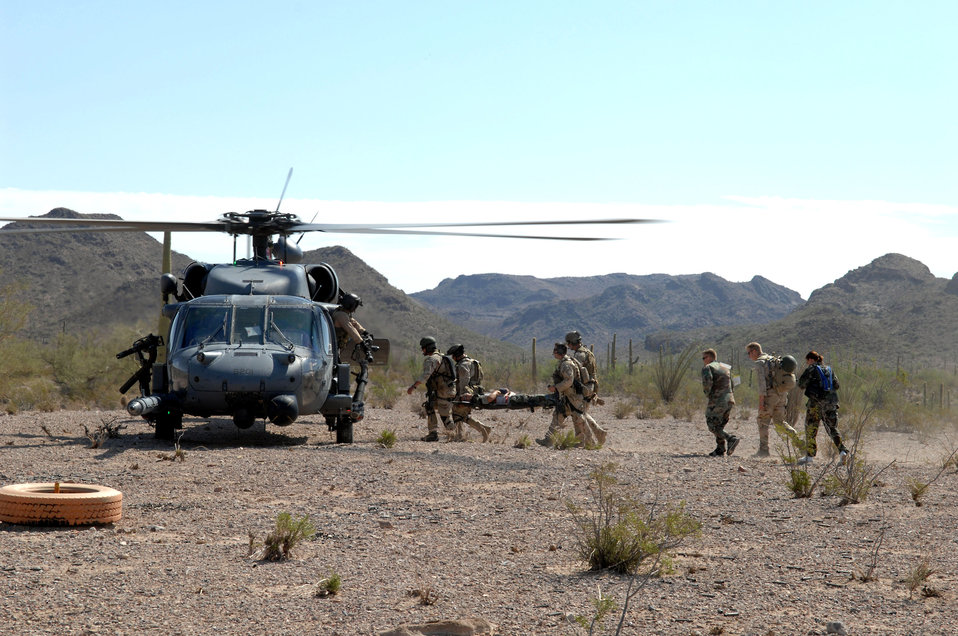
Angels bring thunder

48th Rescue Squadron pararescuemen transport rescuees to an awaiting HH-60 Pave Hawk from the 55th RQS during Exercise Angel Thunder July 16 at Gila Bend, Ariz. The exercise is designed to provide realistic combat search and rescue training for Airmen in combat rescue forces. Members of the 48th and 55th Rescue Squadrons are from Davis-Monthan Air Force Base, Ariz.